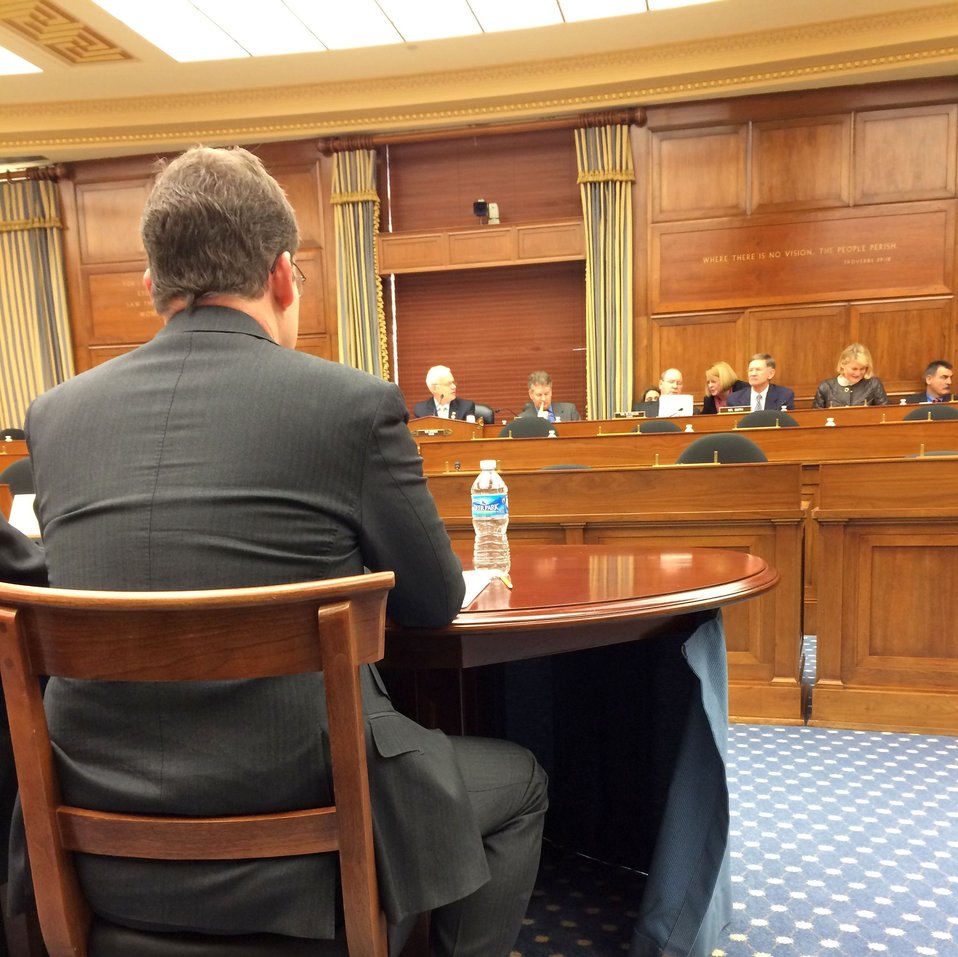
Dr. Romine Testifies Before Congress

Dr. Charles Romine (left), Director of the NIST Information Technology Laboratory prepares to testify before a joint House of Representatives Science Committee Hearing held by the Subcommittee on Oversight, and the Subcommittee on Research and Technology. The Hearing was entitled “Can Technology Protect Americans from International Cybercriminals?”